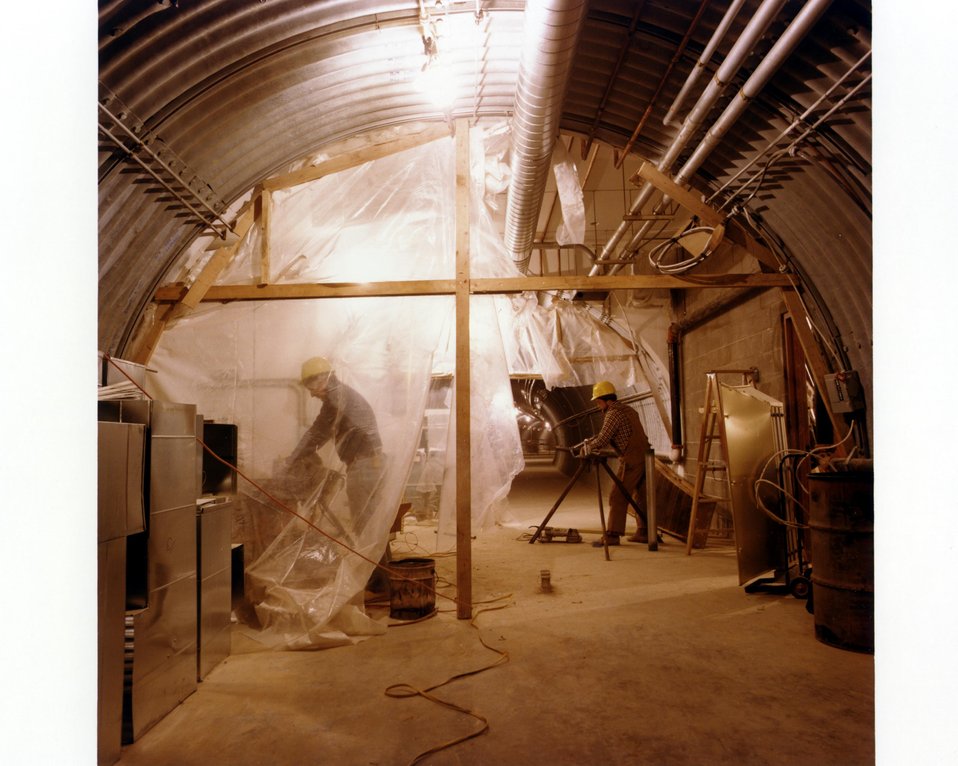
THE EXPERIMENTAL HALLS ARE DESIGNATED BY THEIR 'HAND OF CLOCK' POSITION AROUND THE RING. CBA IS A PROTON-PROTON COLLIDING BEAM ACCELERATOR WHICH IS BEING BUILT TO STUDY THEBASIC STRUCTURE OF ENERGY AND MATTER. THE FACILITY ITSELF IS AN UNDERGROUND CIRCULAR TUNNEL, WHICH IS 3.8 KILOMETERS IN CIRCUMFERENCE. TWO RINGS OF SUPERCONDUCTING MAGNETS WILLBE INSIDE THE TUNNEL. PROTON BEAMS WILL BE INJECTED INTO THE TUNNEL AND ACCELERATED TO ENERGIES UP TO 400 GEV. AT SIX PLACES ALONG THE TUNNEL, THE BEAMS WILL COLLIDE. EX- PERIMENTAL HALLS, WHICH ENCLOSE THESE 6 INTERSECTIONS, WILL HOUSE EQUIPMENT FOR STUDYING THE RESULTS OF THE COLLISIONS.